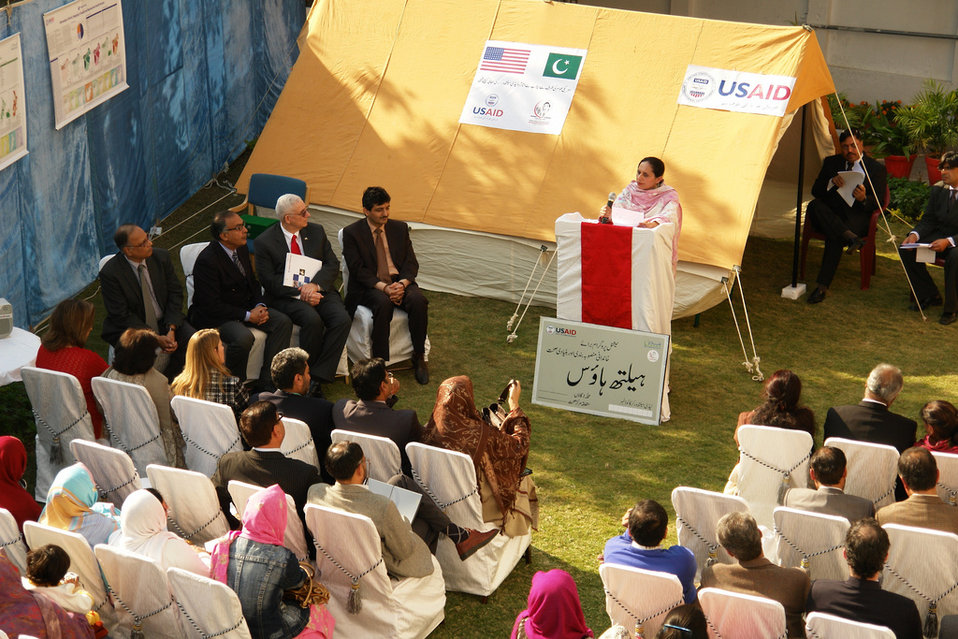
Medical Kits for Lady Health Workers

Islamabad, December 20, 2010 - Sakina Shinwari, the Supervisor of Pakistani Lady Health Workers, and other officials from the Government of Pakistan and United States Agency for International Development (USAID) participated in a ceremony today where 1,500 medical kits were provided to Lady Health Workers. These kits will replace supplies lost during the recent flooding in Pakistan and are part of the United States’ continuing support for Pakistan’s flood relief and recovery efforts.